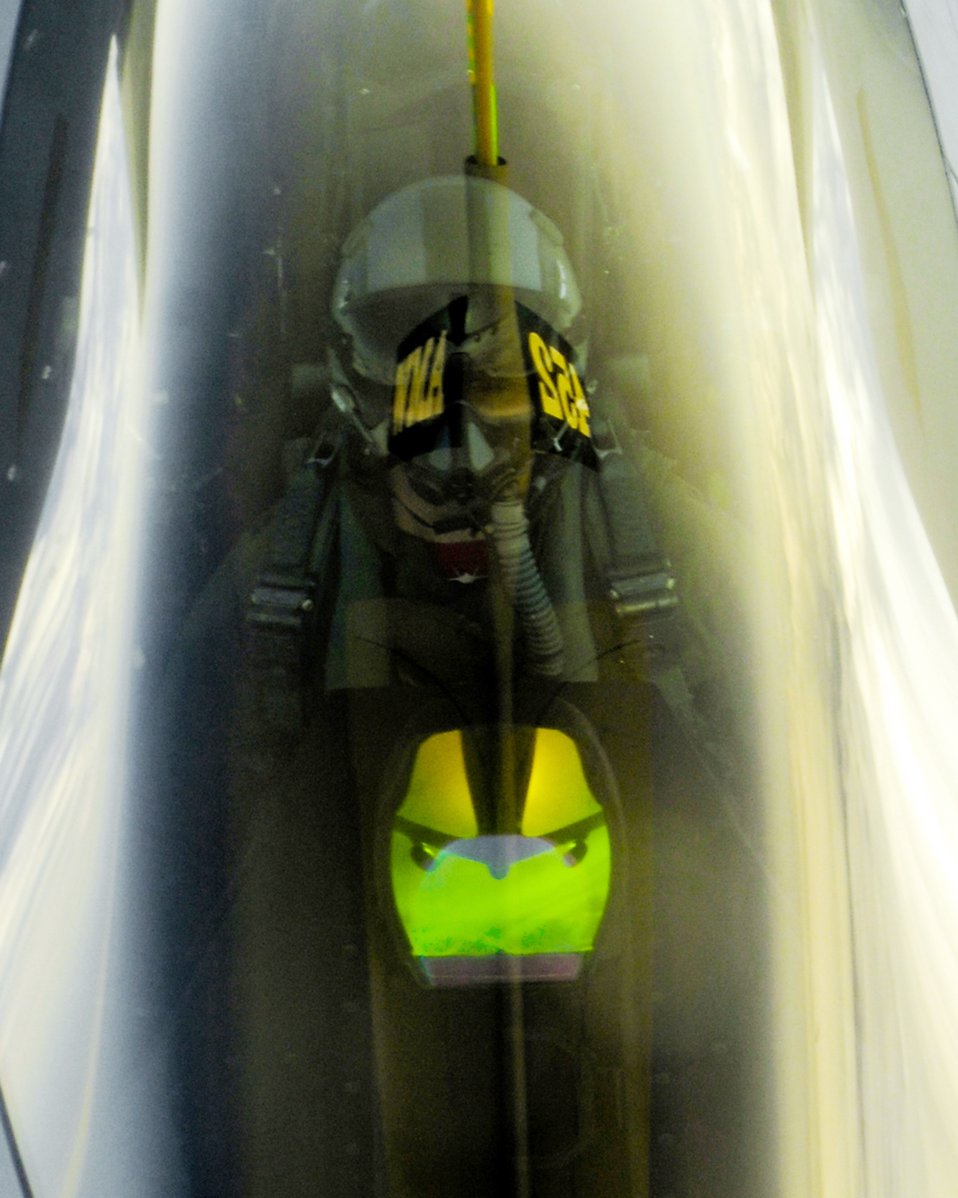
Time for fuel

An F-22 Raptor approaches a KC-135 Stratotanker during an aerial refueling mission June 19, 2009, as part of Northern Edge 2009 near Eielson Air Force Base, Alaska.